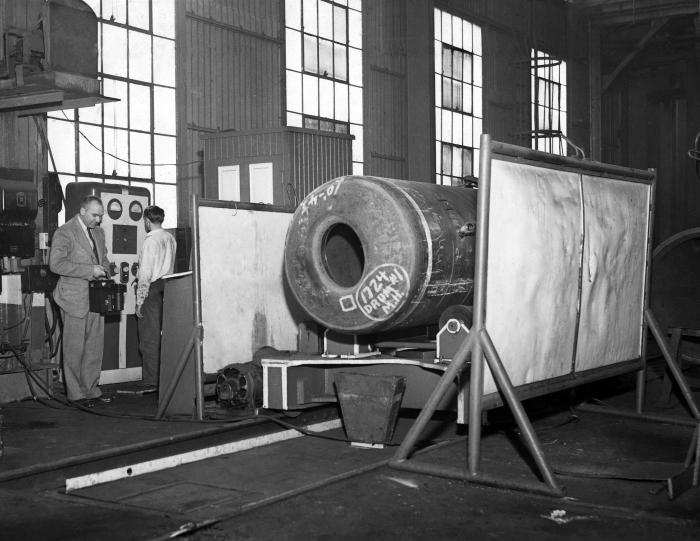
This historic image, published in the November, 1947 issue of 'Industrial Hygiene Newsletter', was provided by the Center for Disease Control's (CDC), National Institute for Occupational Safety and Health (NIOSH), and depicted two technicians performing a radiophotograph of a boiler weld, using a 400 kV X-ray, and large radiographic plates. Even today, radiographic analyses are still performed in order to reveal the presence of stress fractures in dense materials such as metals and concrete. In this particular image the scenario showed one technician operating the controls, and the other, dressed in a business suite, who might have been an industrial hygienist, taking readings on contaminating radiation escaping from the test site.